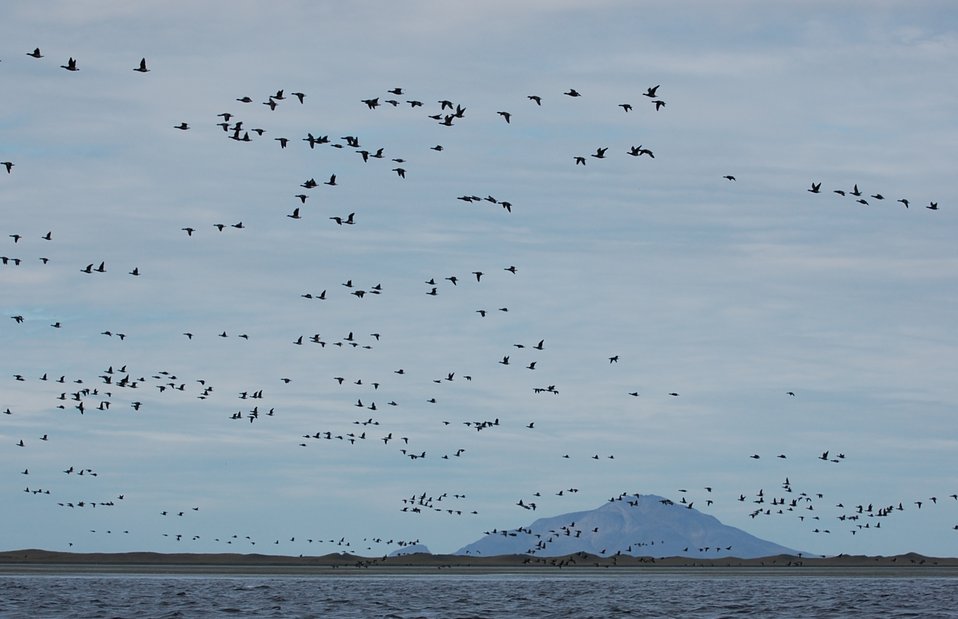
Brant at Izembek Lagoon

Izembek National Wildlife Refuge